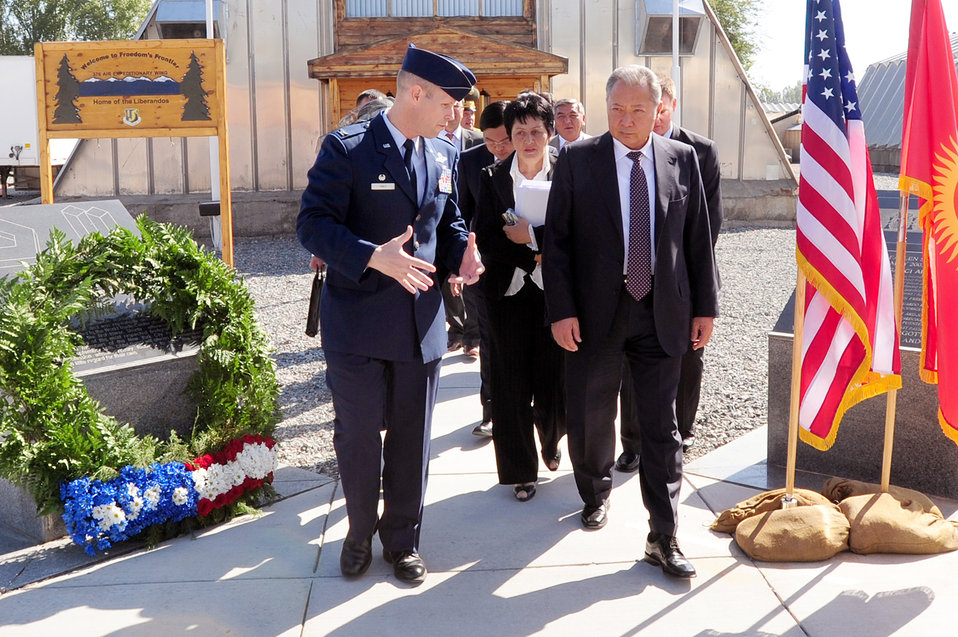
Deployed Airmen honor 9/11 with Kyrgyz president

Kyrgyz President Kurmanbek Bakiyev and Col. Blaine Holt tour the base during a visit by the president Sept. 11, 2009, at the Transit Center at Manas, Kyrgyzstan. President Bakiyev honored those who lost their lives in 2001 with a wreath-laying ceremony and a few words of friendship between Kyrgyzstan and the U.S. Colonel Holt is the 376th Air Expeditionary Wing commander.